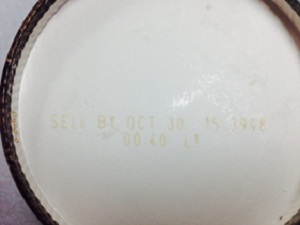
RECALLED – Chocolate Hazelnut Mascarpone Ice cream and Caramel Hazelnut Fudge Truffle Ice cream